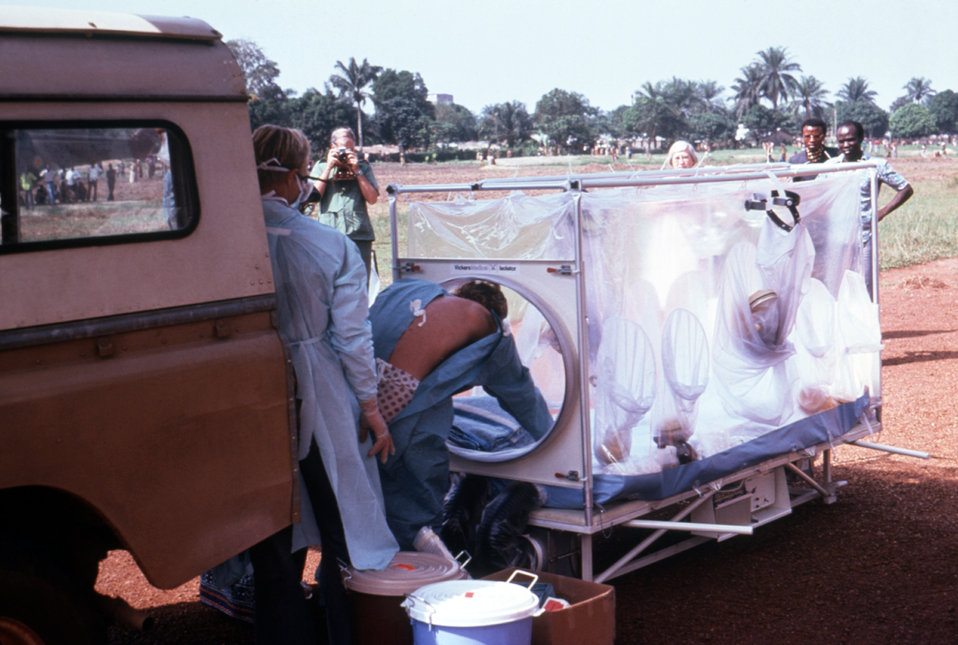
Shown here during a 1976 medical evacuation in Zaire, suspected Ebola patient Del Conn is shown being transferred from a vehicle into a plastic isolator equipped with a HEPA air filter system.